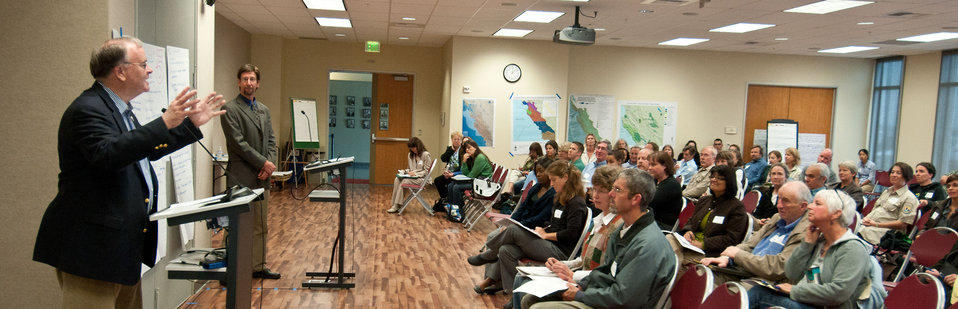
Congressman Sam Farr (left) highlighted what he will be taking away from observing and listening to several teams of federal representatives working together, during the America’s Great Outdoors Initiative (AGO) Monterey Bay Pilot Area Focus Session, moderated by U.S. Department of Agriculture Natural Resources Conservation Service Assistant State Conservationist Daniel Monutjoy (right) in the City of Watsonville’s Civic Plaza in California, on Friday, June 17, 2011. Congressman Sam Farr, U.S. Department of Agriculture and representatives of other Federal and state resource management agencies came together to identify partnership opportunities and determine actions for protection and enhancement of water quality and publicize voluntary stewardship in the watersheds that drain into the Monterey Bay National Marine Sanctuary. This area includes the counties of San Mateo, Santa Cruz, Santa Clara, San Benito, Monterey, and San Luis Obispo. Key questions identified existing multi-county or multi land use partnerships; what is not being done; possible partnerships - collective resources to maximize the benefits to natural resources and communities; and additional resources that organizations can bring to maximize AGO. President Barack Obama signed the initiative on April 16, 2010 to develop a 21st Century conservation and recreation agenda.